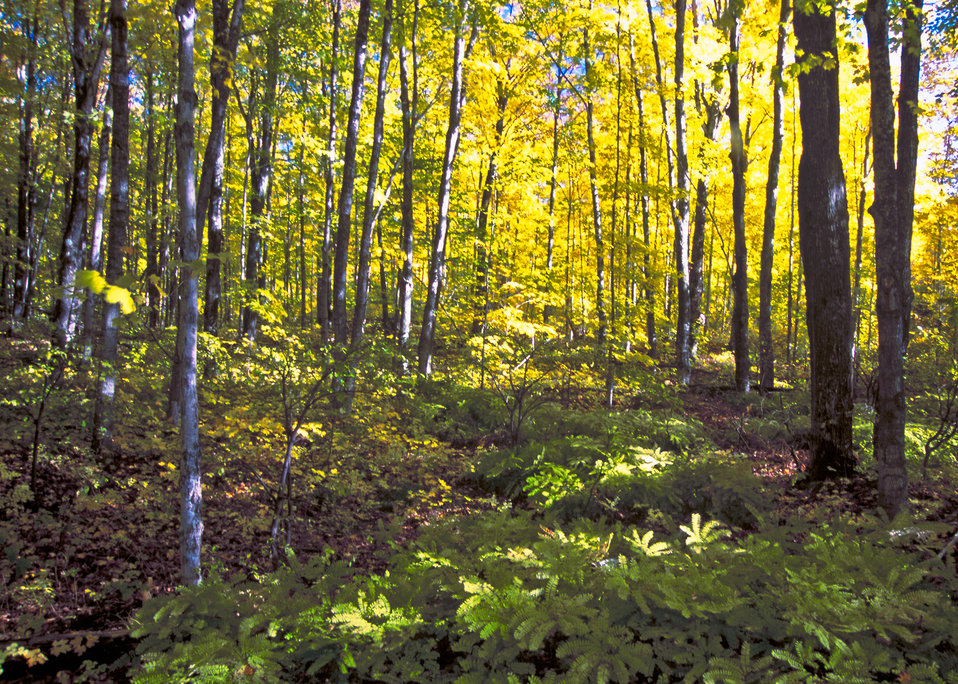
Nature’s color abounds in the Hiawatha National Forest on the Upper Peninsula of Michigan during the fall. In the National Forests of the United States the beauty and sights are endless.